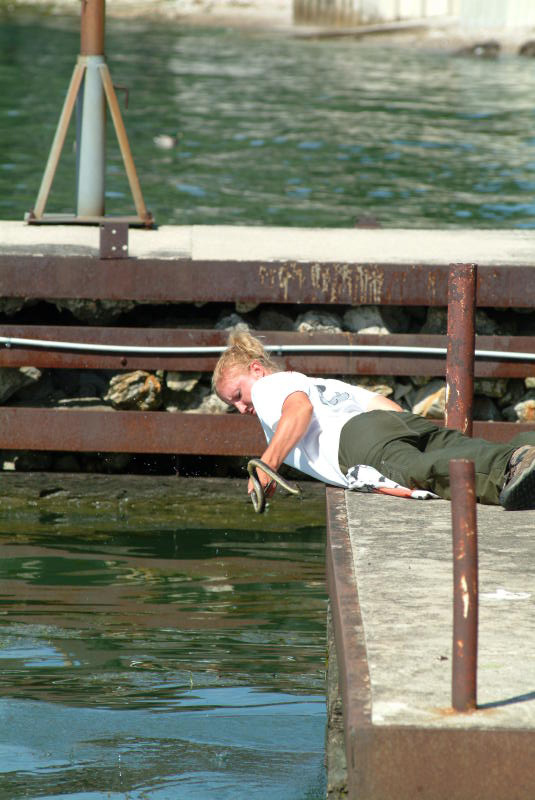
Recovered Lake Erie watersnake (Nerodia sipedon insularum)